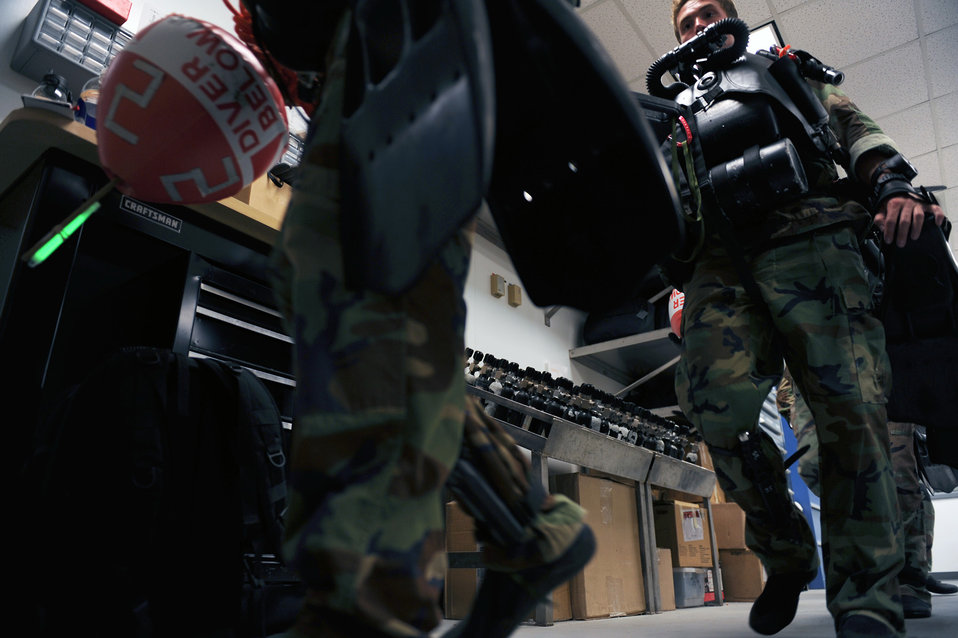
Tyndall Airmen prepare for morning dive

Airmen head out for an early morning dive during their combat dive course June 10, 2010, at Panama City Beach, Fla. The Airmen are combat controllers in training assigned to the 342nd Training Squadron Det. 2.